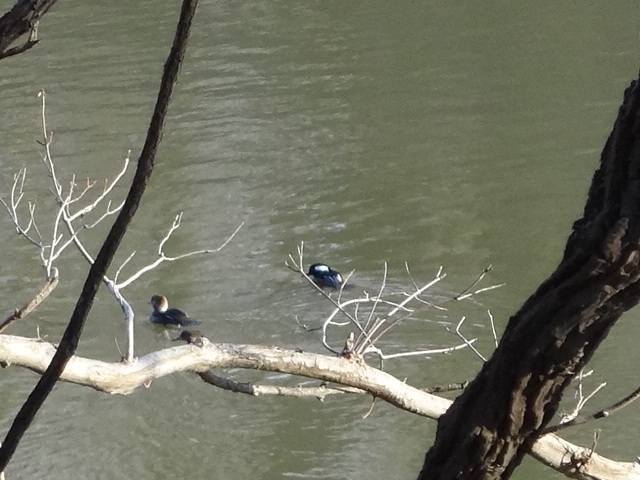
Hooded Mergansers on the Marais des Cygnes River

The Marais des Cygnes River is an appealing place for ducks to congregate.